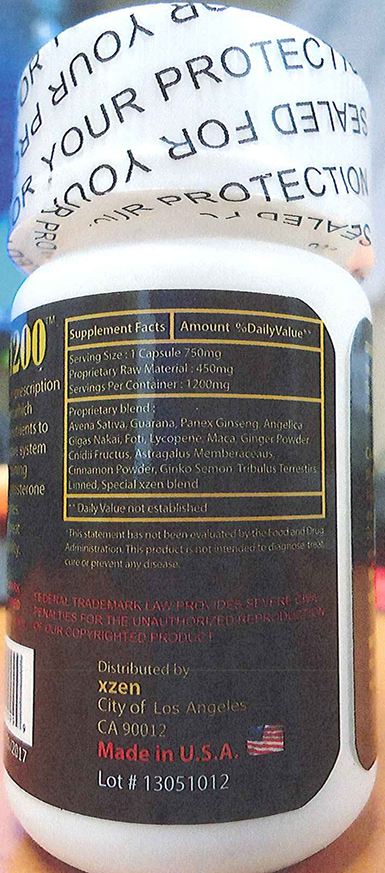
RECALLED – Dietary Supplement

April 1, 2014 – Product Recall – Nova Products, Inc. Issues Voluntary Nationwide Recall of Dietary Supplements with Undeclared Active Pharmaceutical Ingredients.